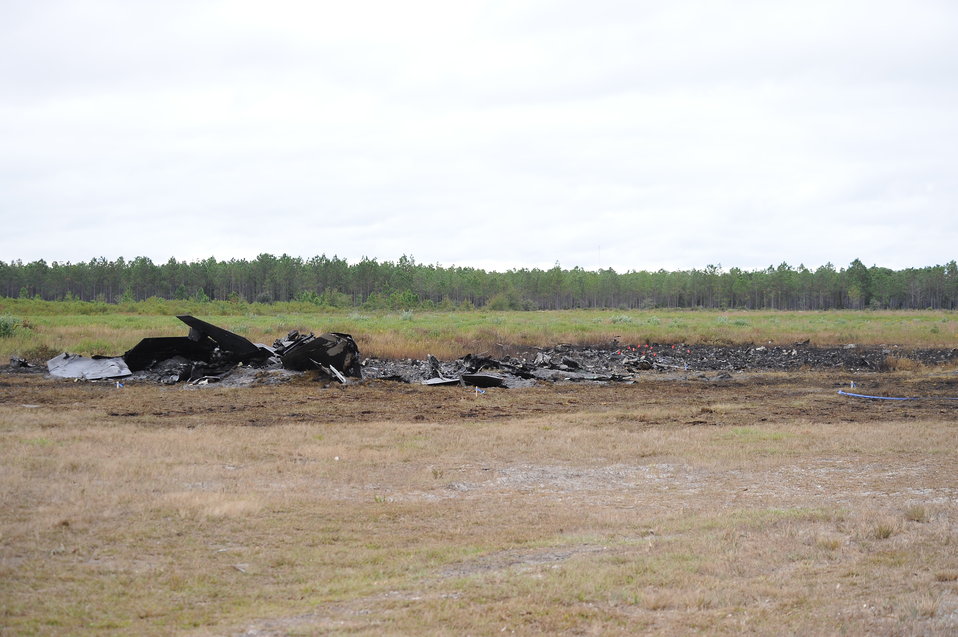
Ashes to Ashes

Wreckage of an F-22 Raptor remains at the crash site on Tyndall Air Force Base, Fla., Nov. 15, 2012. Officials with the 325th Fighter Wing are continuing to investigate and secure the scene. The pilot safely ejected from the aircraft and first responders were on the scene in less than two minutes.